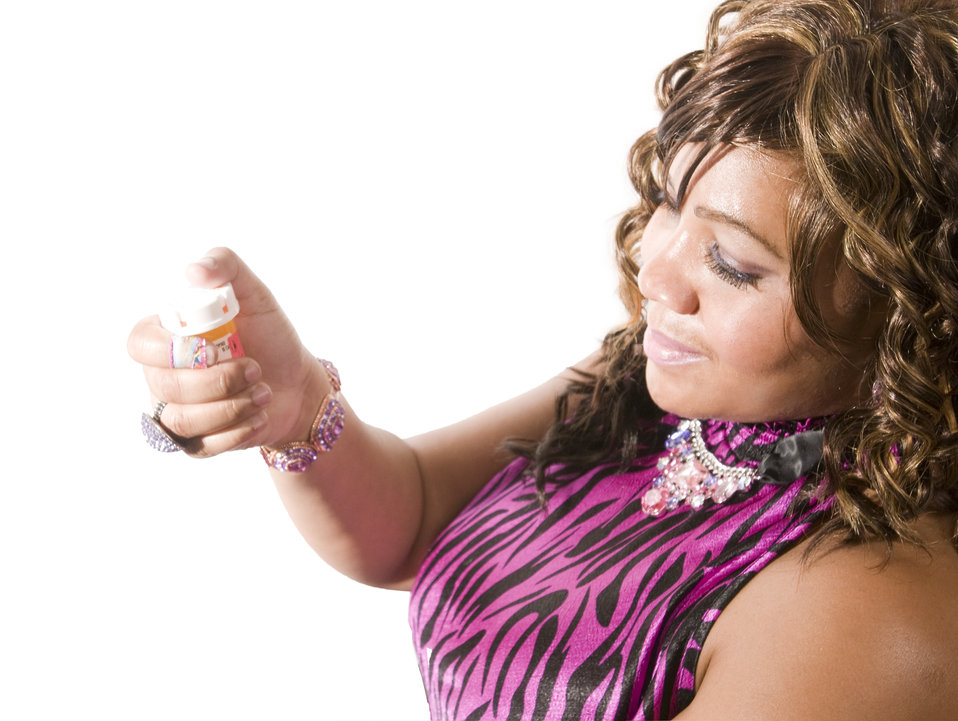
In her right hand, this woman was holding an amber prescription bottle containing an unknown medication. She was reading the directions printed on the bottle's label, after having been prescribed this medication by her healthcare provider.